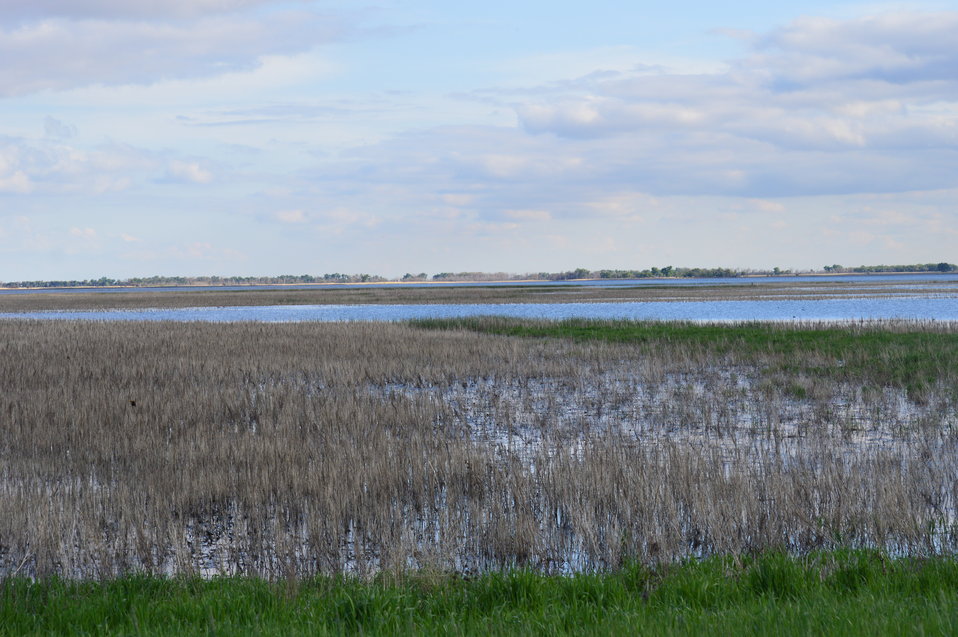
Sand Lake

Scenery and wildlife at Sand Lake National Wildlife Refuge in South Dakota